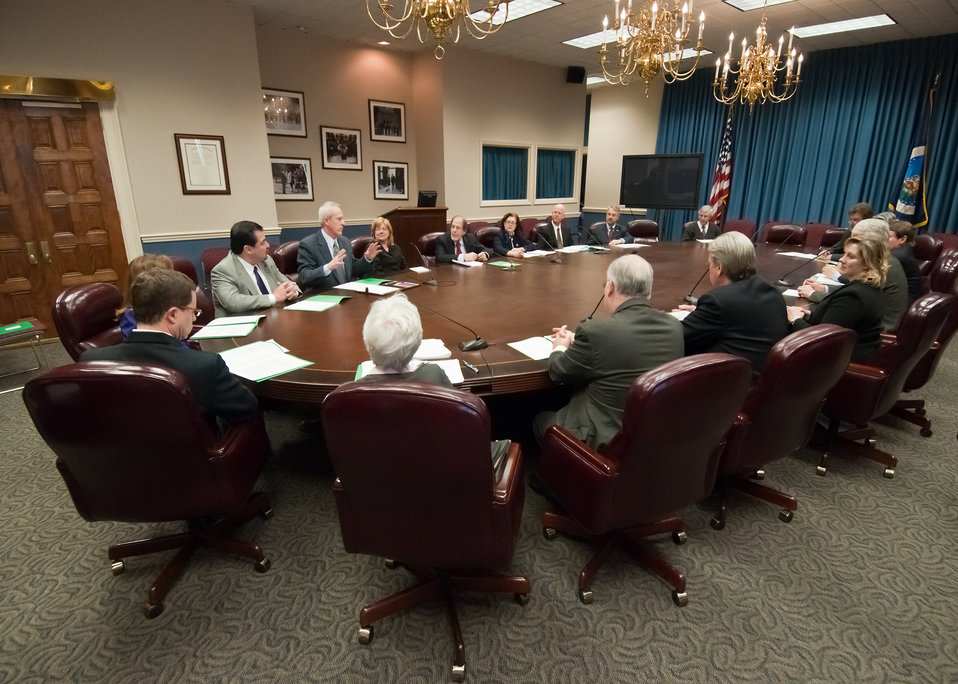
Michael Landa, Acting Director, Center for Food Safety and Applied Nutrition Food and Drug Administration, Health and Human Services the Interagency Risk Assessment Consortium and members of the Interagency Risk Assessment Consortium (IRAC) met in Washington, D.C., Tuesday, February 8, 2011, to sign the updated Charter of the Interagency Risk Assessment Consortium. The Consortium established by President's Food Safety Council revised the Charter in 2003 to provide the basis for collaboration among the members of the IRAC to carry out the responsibilities set forth in the President’s Report.